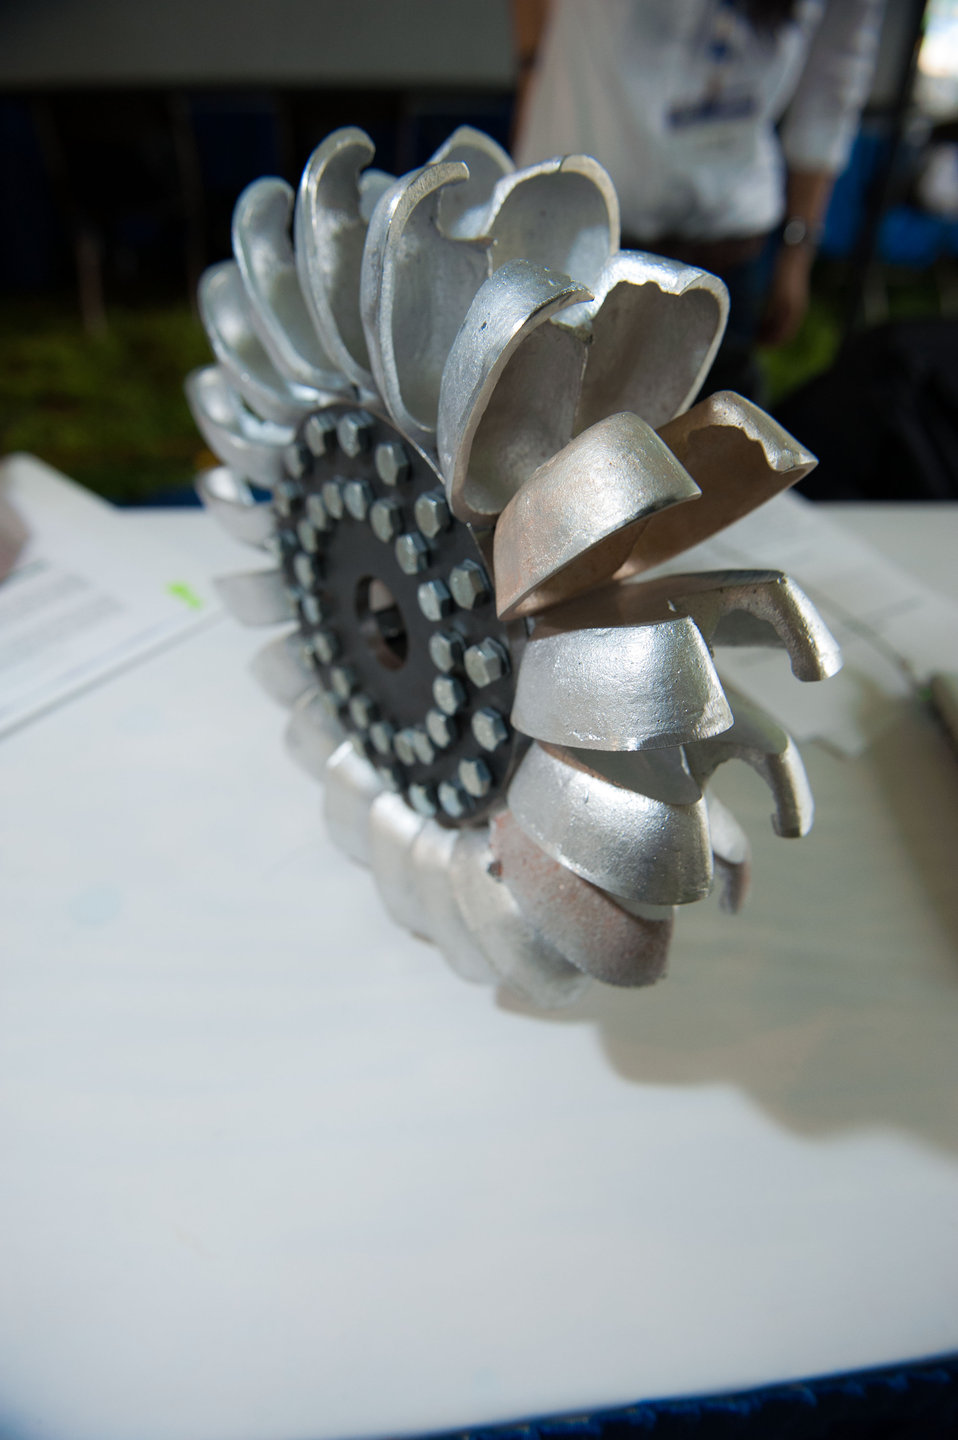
April 18, 2013 - P3 Design Expo, Dartmouth College

Dartmouth Humanitarian Engineering: Small-scale Hydropower for Rural Electrification
This turbine is used by the small-scale hydropower machine in Rwandan villages to generate energy.

Dartmouth P3 page
Dartmouth Team Facebook Page

People Prosperity and the Planet: National Sustainable Design Expo on the National Mall 18-19 April 2013